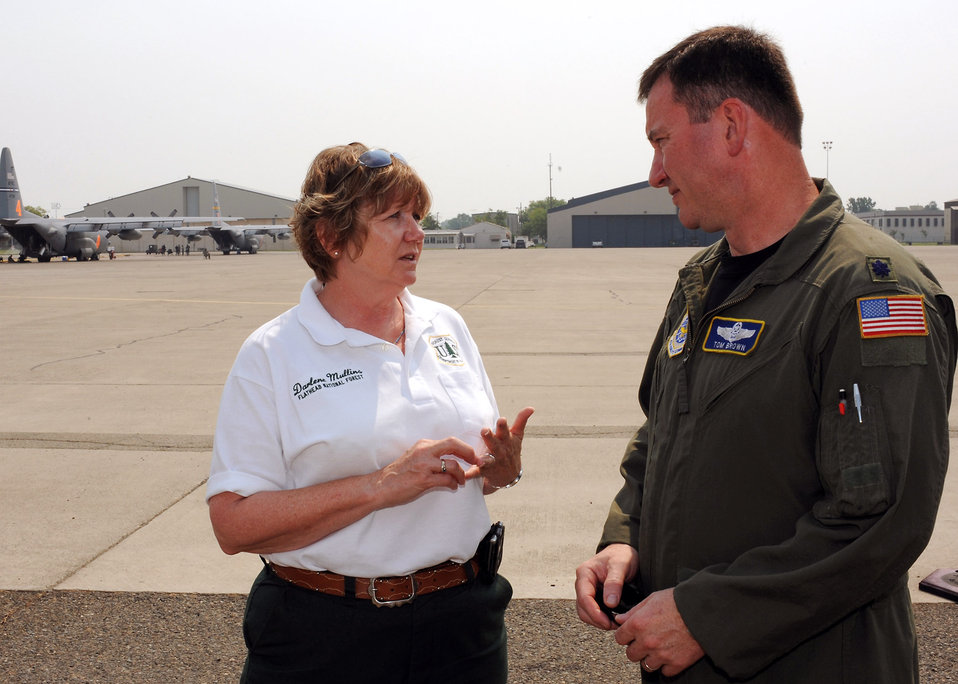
Teamwork helps Airmen fight fires

Darlene Mullins discusses upcoming firefighting missions with Lt. Col. Tom Brown July 6 at McClellan Airfield, Calif. Ms. Mullins is a Modular Airborne Firefighting System liaison officer for the U.S. Forest Service. Colonel Brown is the commander of the 145th Air Expeditionary Squadron of the North Carolina Air National Guard.